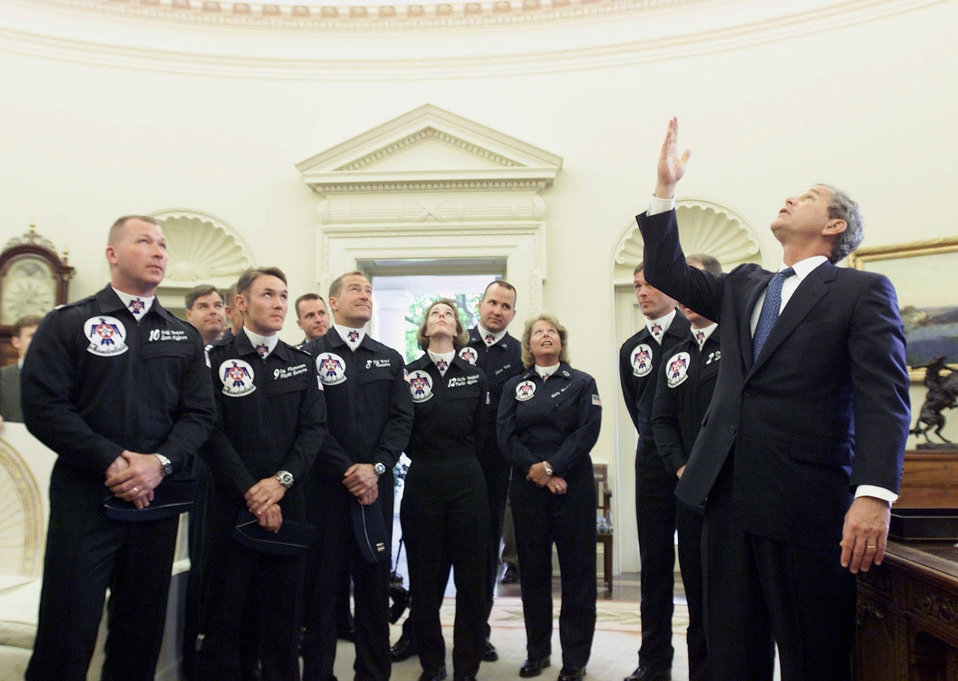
In the White House

WASHINGTON D.C. -- President George W. Bush met with the U.S. Air Force Thunderbirds Air Demonstration Squadron at the White House, May 16, 2001.